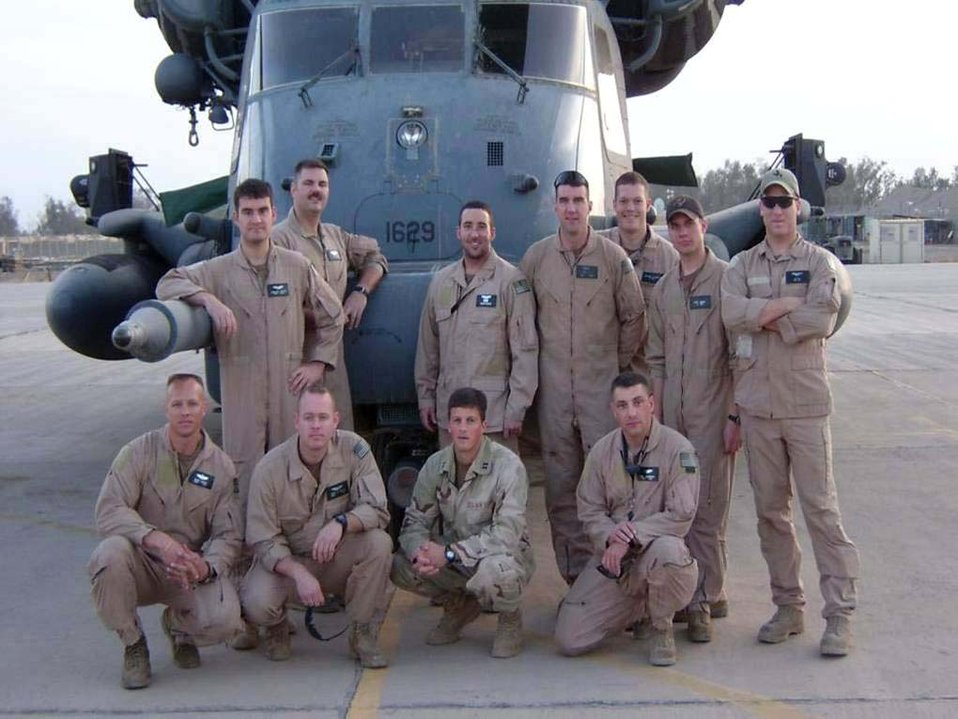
Captain 'walks the line' for fellow Airmen

Two MH-53 Pavelow helicoptor crews pose in front of the helicoptor one team used to save the other after their helicopter went down April 12, 2004, during a mission in Iraq.